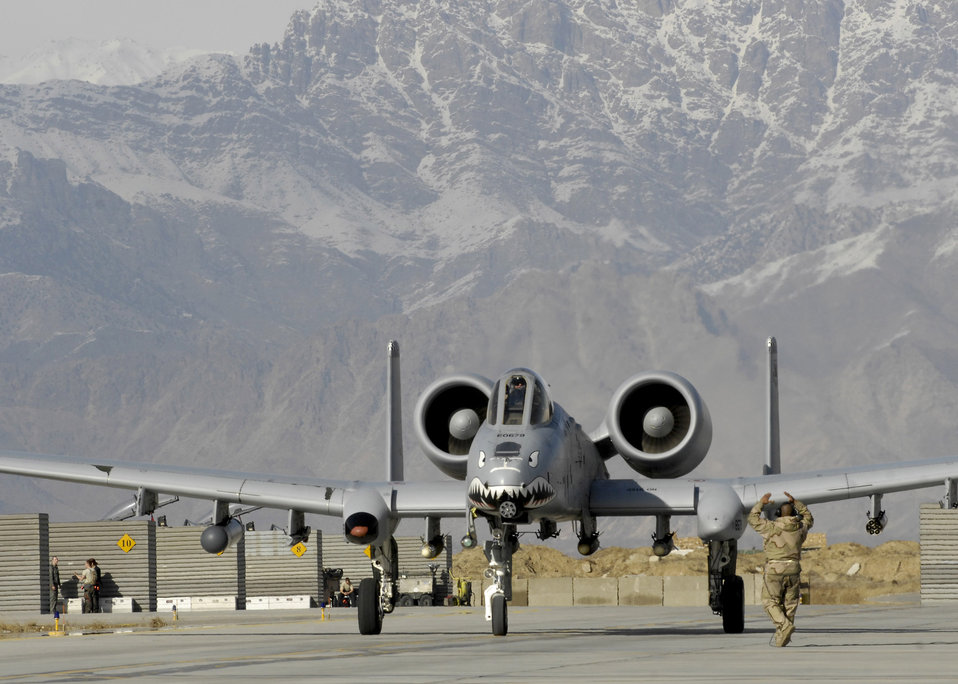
A-10 unit reaches 10,000-hour milestone

Lt. Col. Sam Milam taxies down the flightline in an A-10 Thunderbolt II after logging the unit's 10,000th combat flight hour during a mission Feb. 24 at Bagram Airfield, Afghanistan. Members of the 75th EFS arrived here in September for a four-month deployment, but was extended to six months. Colonel Milam is the 75th Expeditionary Fighter Squadron commander.